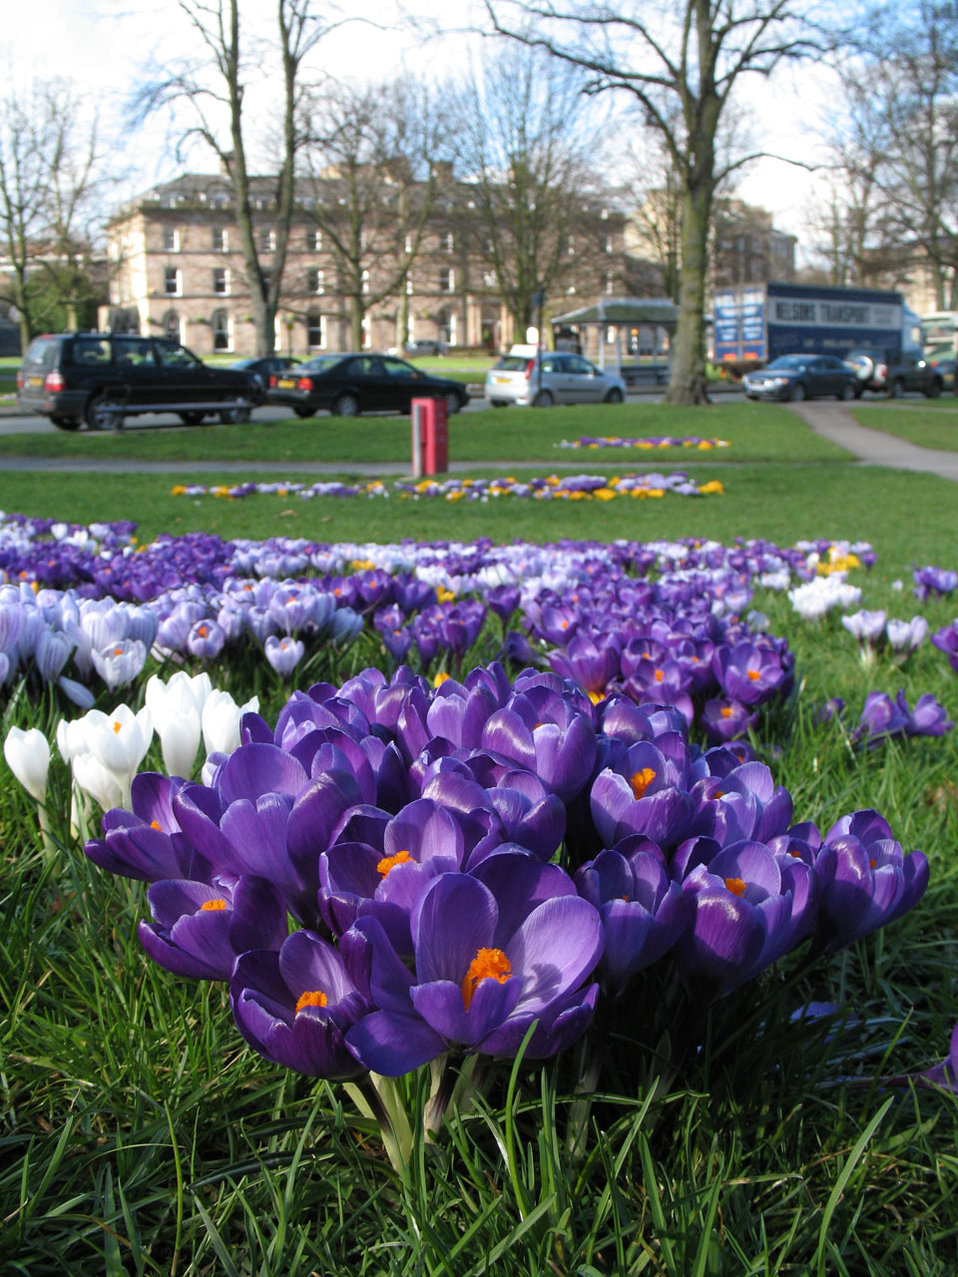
Crocuses in park

Close up photo of crocuses in park with a building in background.